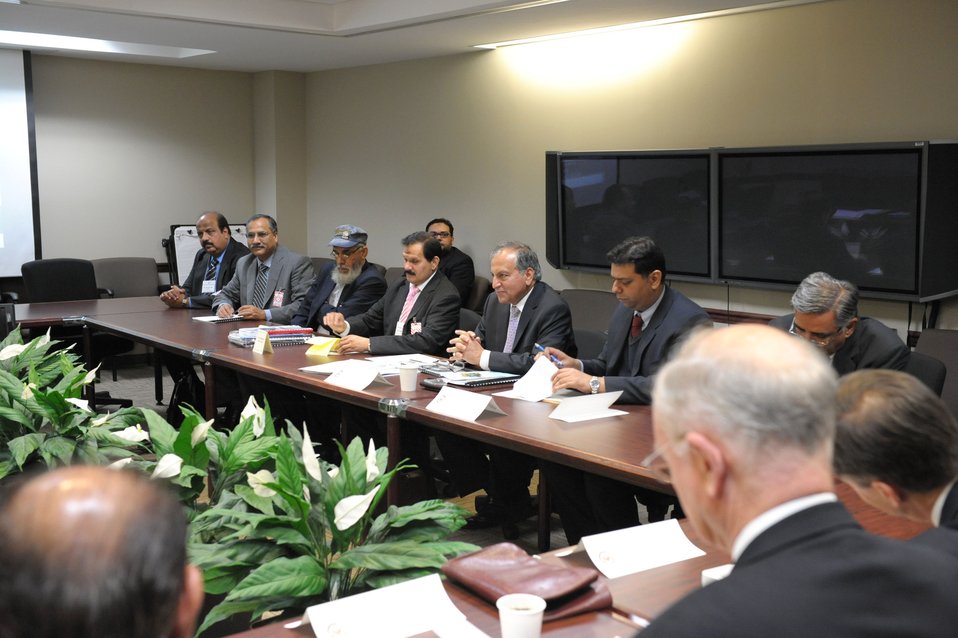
Under Secretary Otero Chairs the Water Working Group

Under Secretary of State for Democracy and Global Affairs Maria Otero chairs the Water Working Group of the U.S.-Pakistan Strategic Dialogue at the U.S. Department of State. In Washington, D.C., on October 20, 2010. Participants included State Department Under Secretary of State for Democracy and Global Affairs Maria Otero, Pakistani Secretary for Water and Power Javed Iqbal and Pakistani Secretary of Food and Agriculture Junaid Iqbal Chowdry.